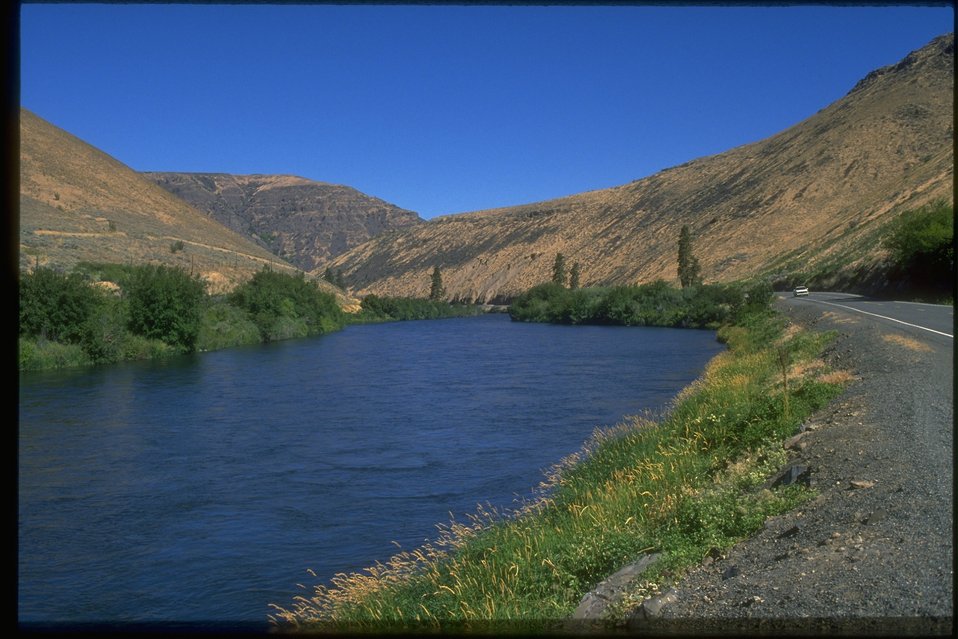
Yakima River in Washington.